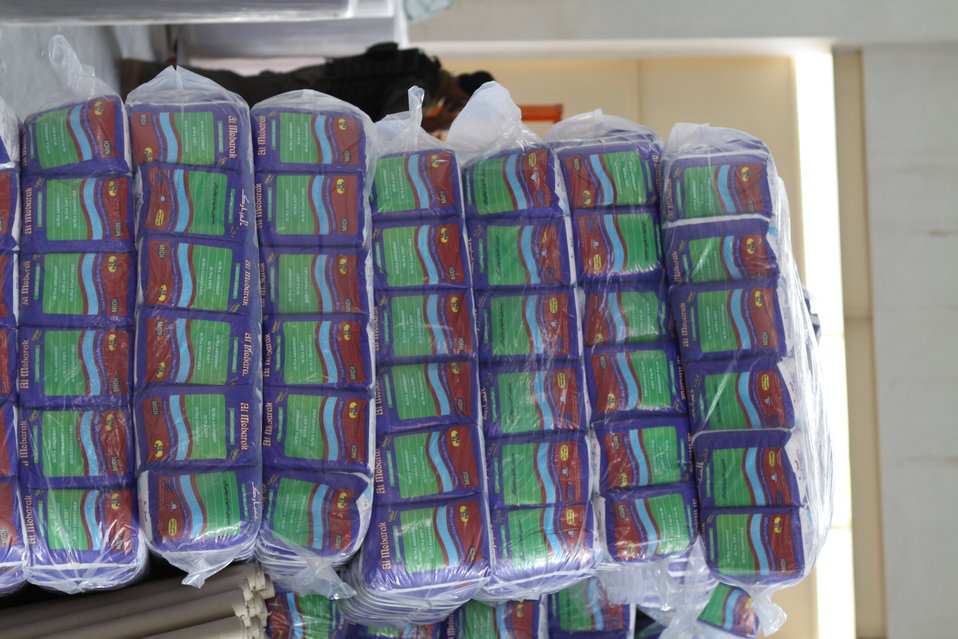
100525 Hirat Marble Conference 821